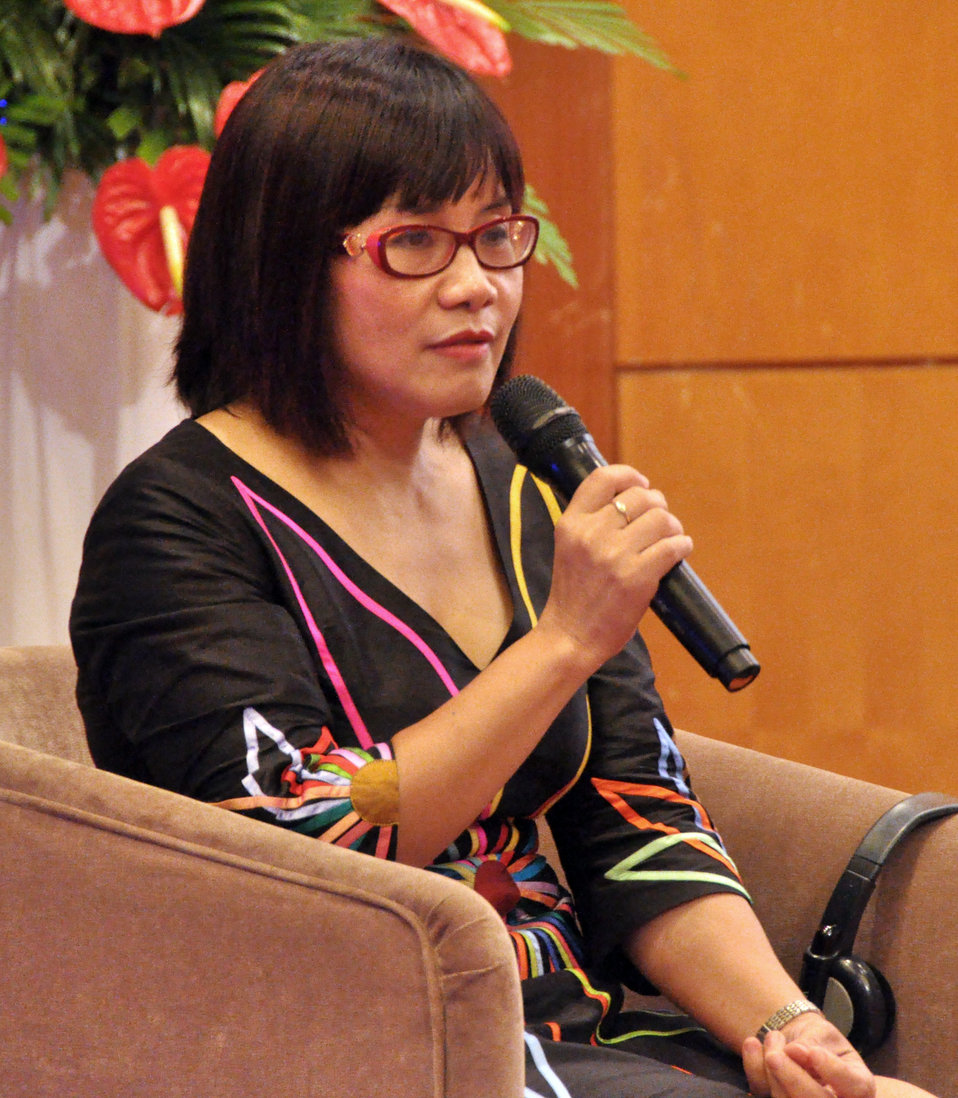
USAID's Support for Trade Acceleration Project (USAID STAR Plus) Closing Ceremony

Hanoi, August 26, 2013.